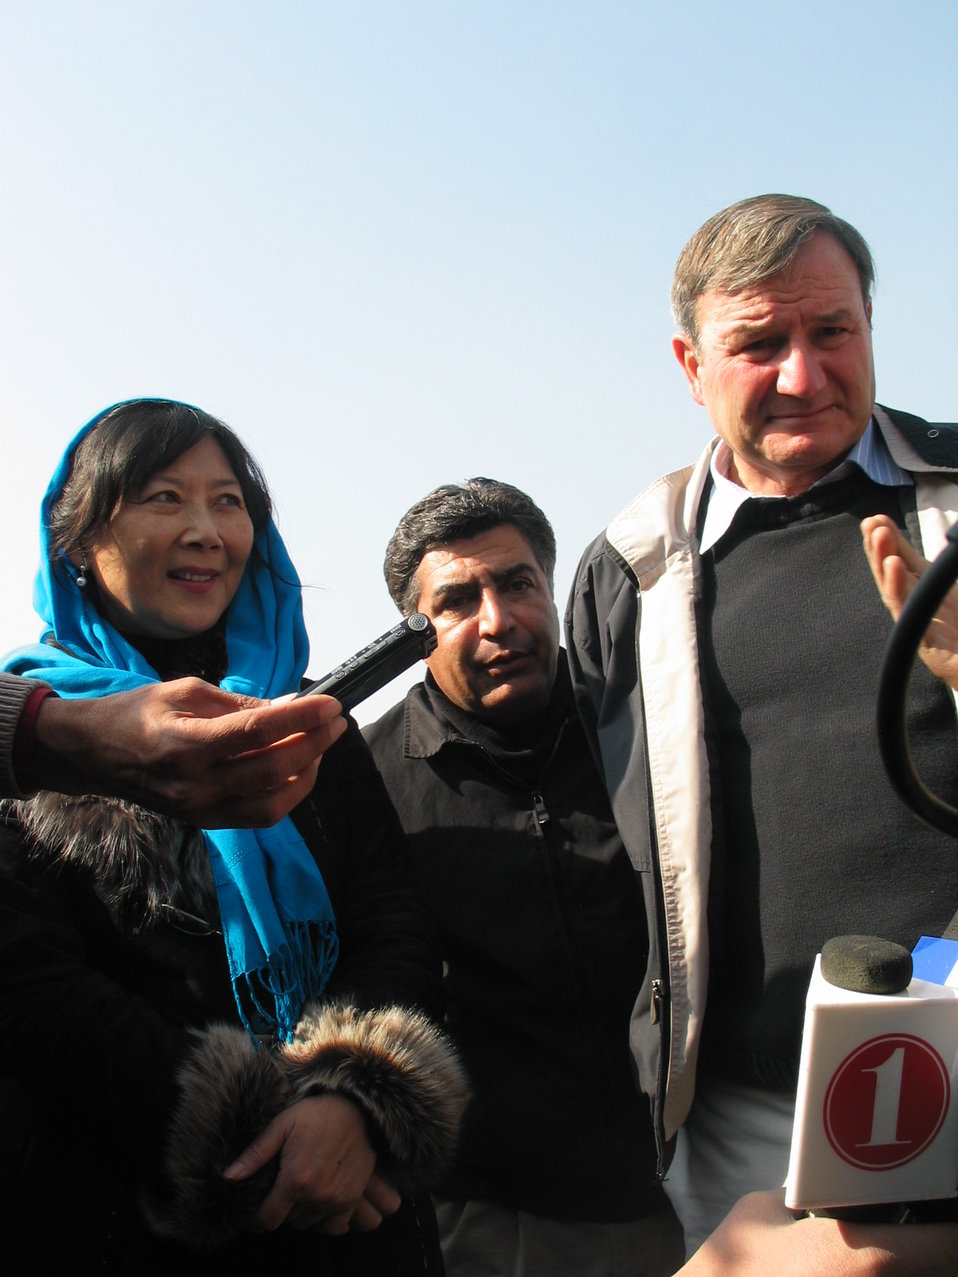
Kabul River Bridge Renovation, December 3, 2010